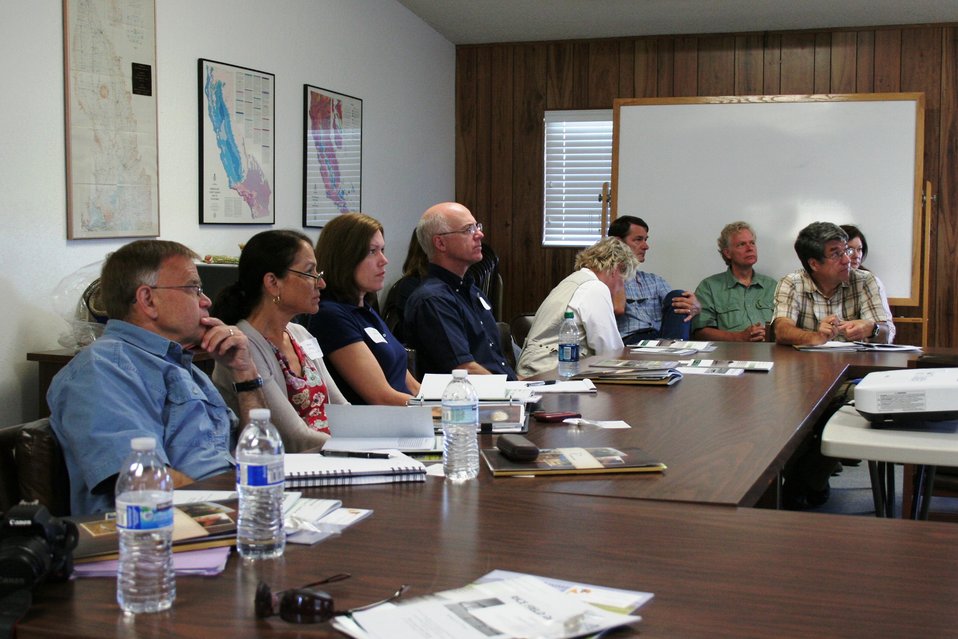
FDA's Rice Tour: Looking for Insights on Arsenic (0748)

FDA Commissioner Margaret A. Hamburg and colleagues visited research facilities and rice farms in California on Sept. 4-5, 2013 in an effort to gain a greater understanding of the presence of arsenic in rice. They toured the facilities and research fields at the Rice Experiment Station in Biggs, Calif. For more information, read the FDA Voice blog:

• On Farms and in Labs, FDA and Partners Are Working to Get Answers on Arsenic in Rice